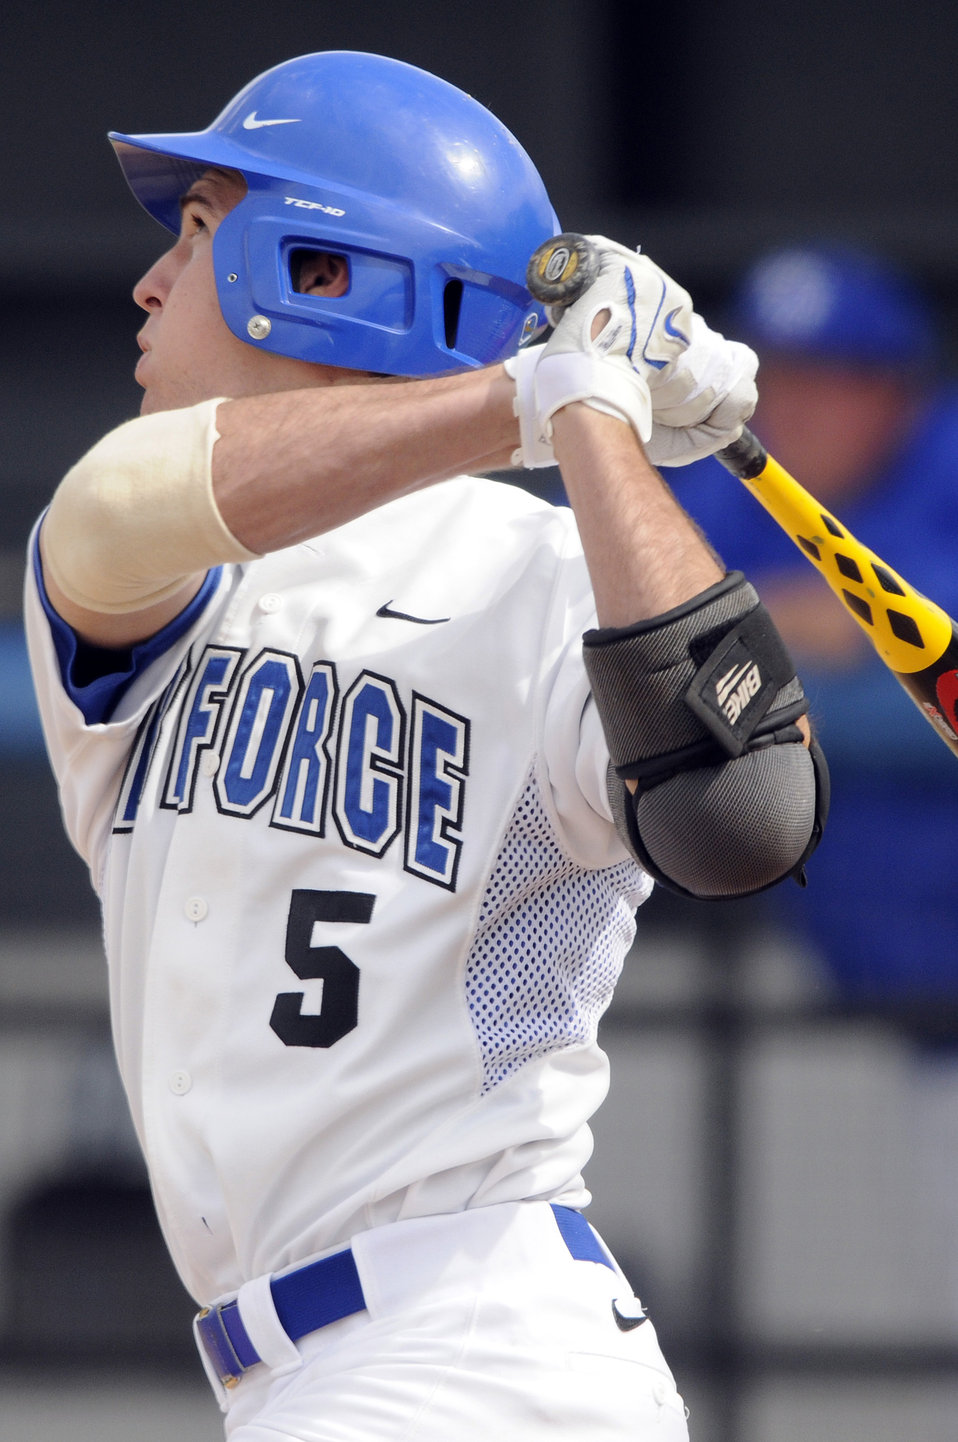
Baseball season ender

Air Force Academy sophomore outfielder Nathan Carter belts one out of the park during the two-game series with the University of New Mexico Lobos May 15 at Falcon Field. The Falcons lost both games, and finished the season with a 14-37 overall record.